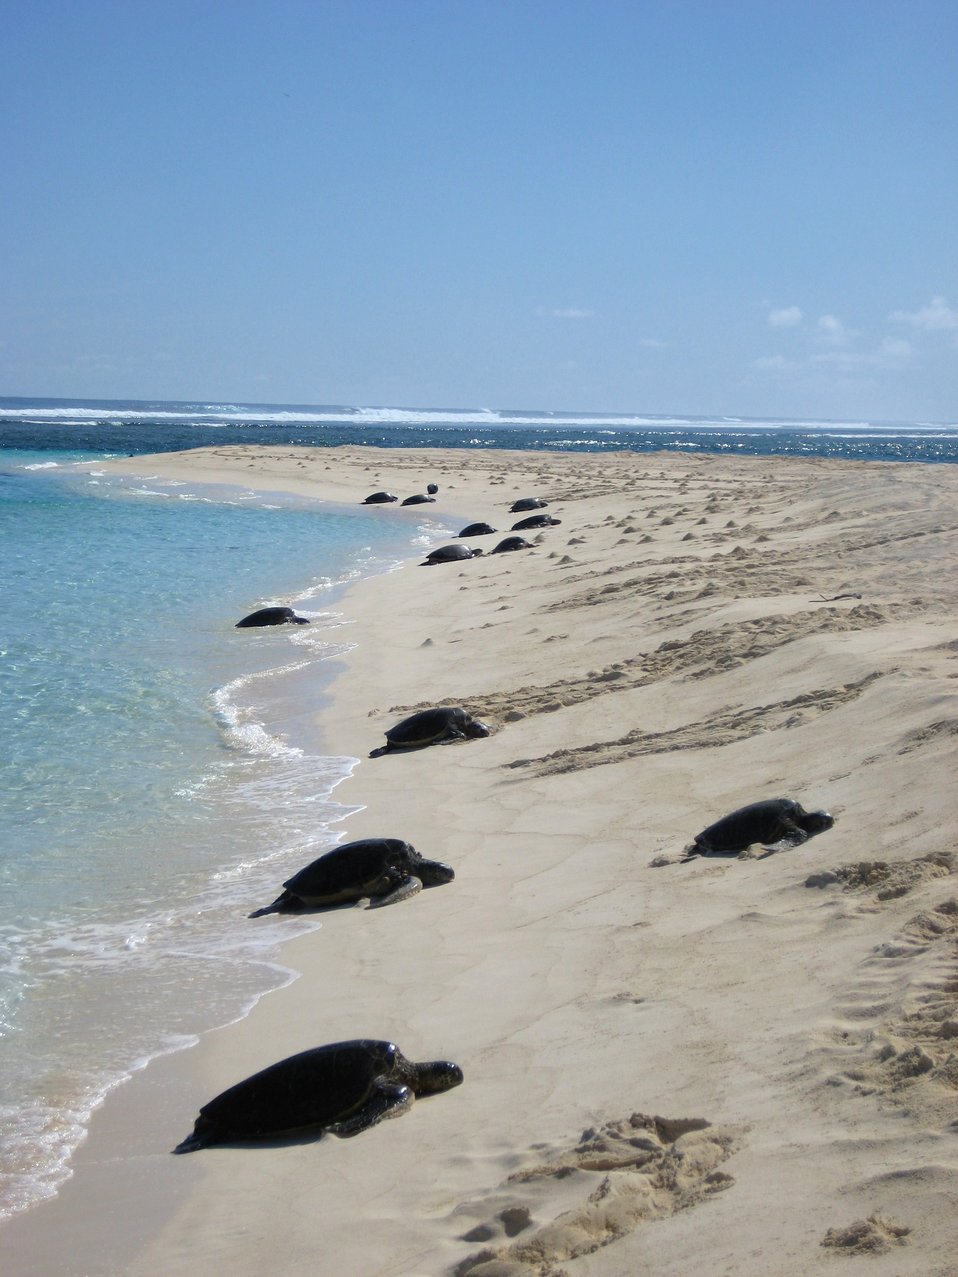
Green turtles coming ashore to lay eggs